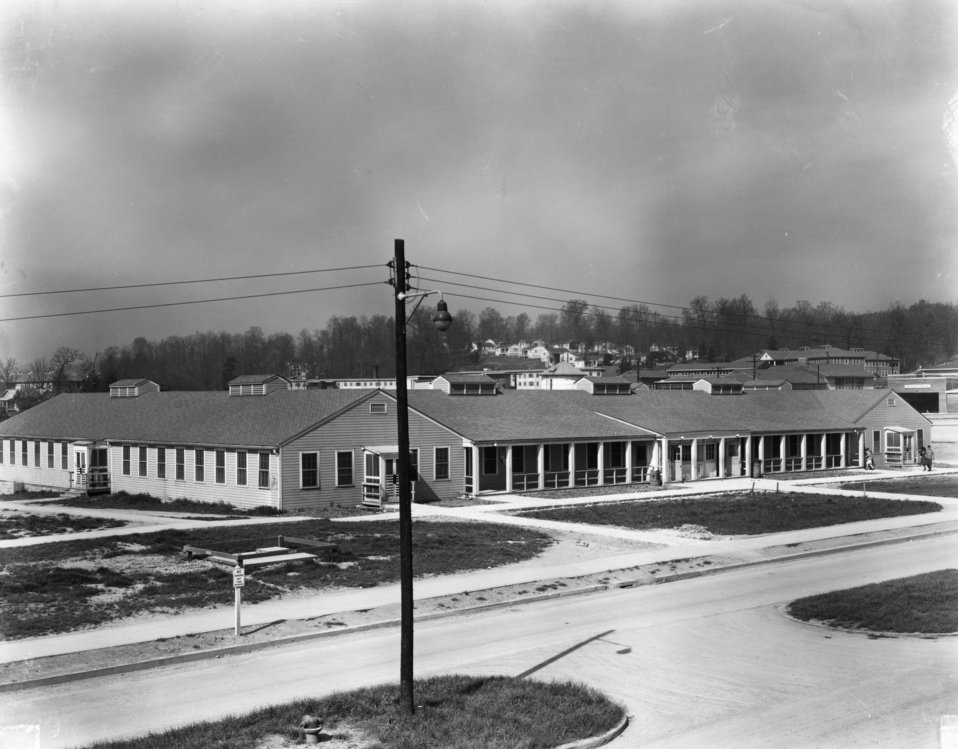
Business activity at Oak Ridge